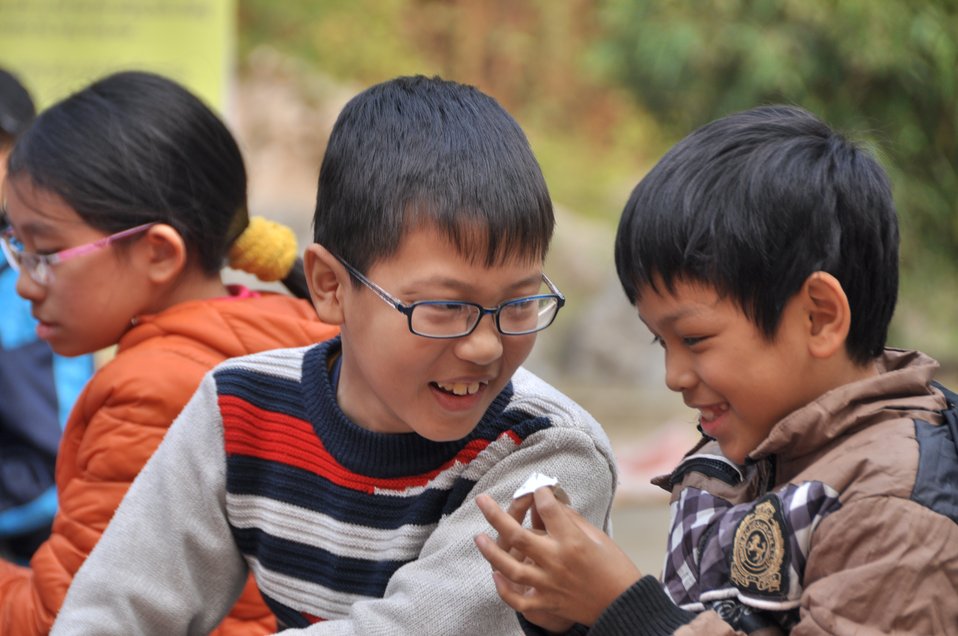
2013-12-23 USAID supports distribution of eyeglasses to pupils and teachers in Quoc Oai01

Kieu Phu Junior Secondary School, Quoc Hoai, Hanoi, December 23, 2013.